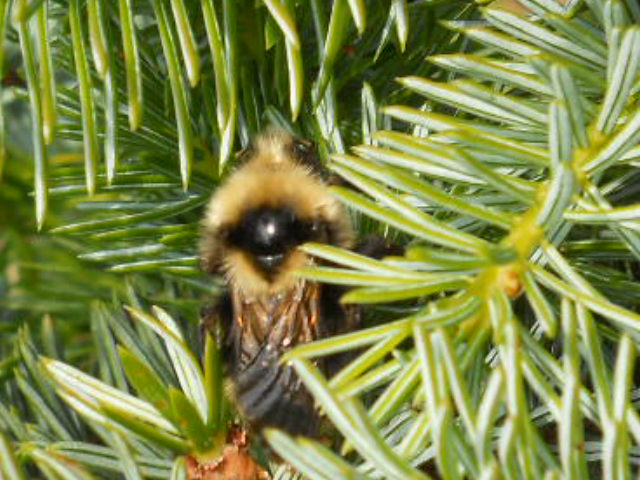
Bee on Spruce

Credit: USFWS
Photo taken by a Salmon Camp participant during a nature photography activity.

Source and Contact: Kodiak National Wildlife Refuge